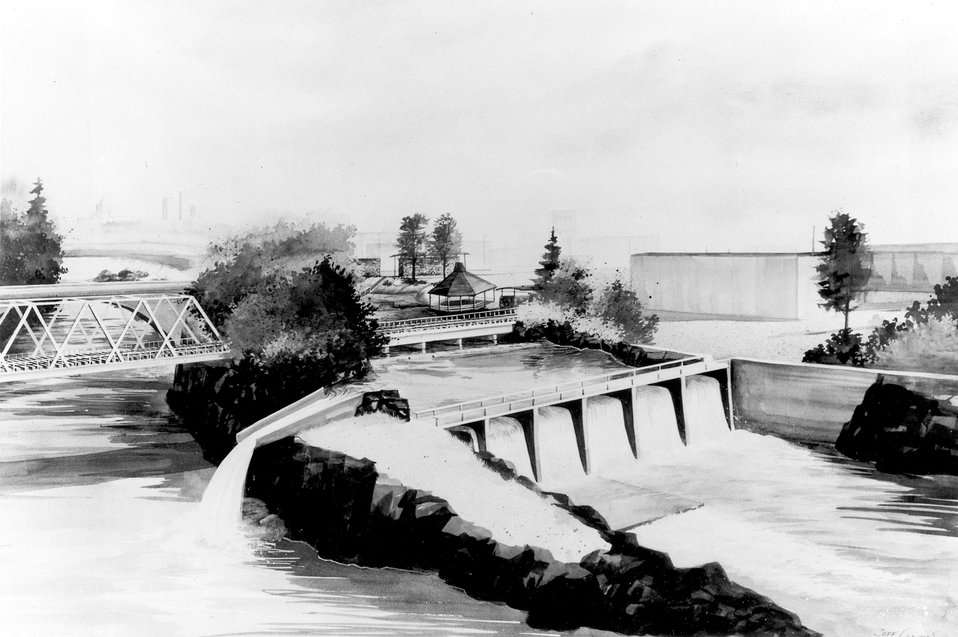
This drawing is a representation of the proposed 7.2 MW bulb turbine installation in the existing 'city' plant. c. 1978